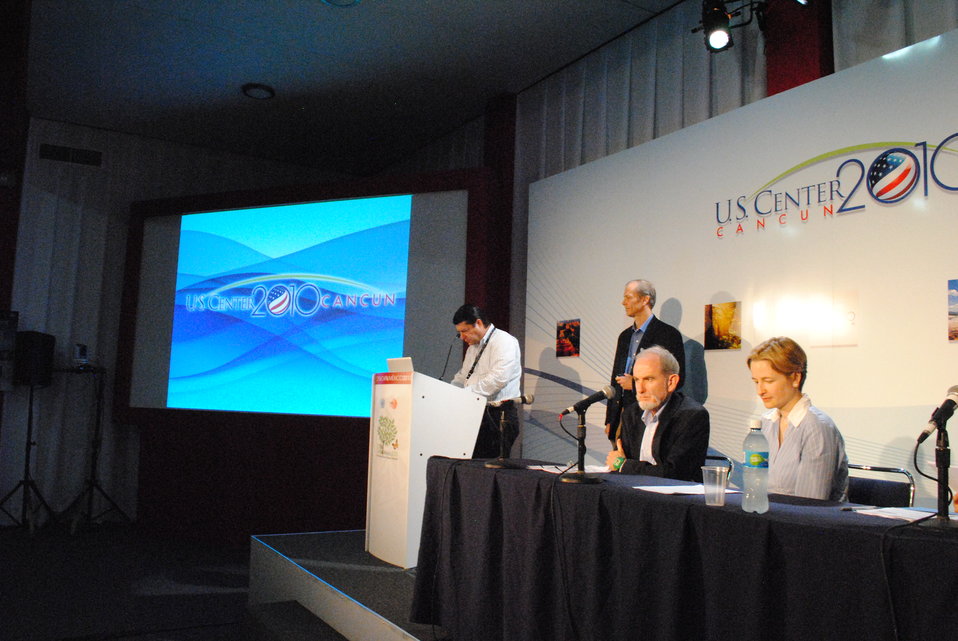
Jacqueline Cochran and Fellow Panelists Respond to Questions

Jacqueline Cochran of the National Renewable Energy Lab (right) and another panelist respond to questions during the 'OpenEI Platform' side event at the U.S. Center at COP-16 in Cancun, Mexico, on December 1, 2010.